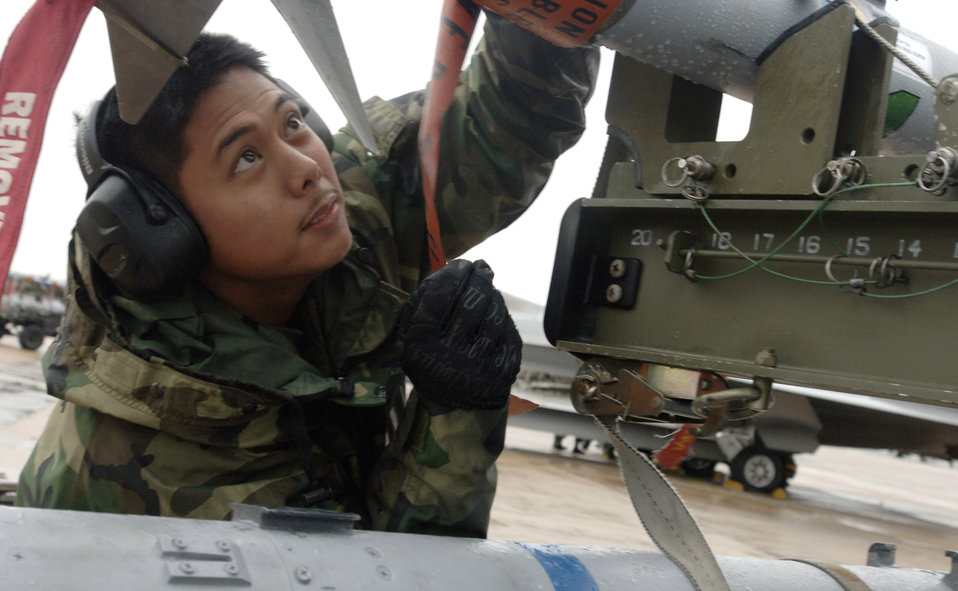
Loading up for competition

Senior Airman Glenn Dayson inspects ammunition during the Load Competition of the Year Jan. 18 at Langley Air Force Base, Va. The competition evaluates technical proficiency, safety procedures and overall time. Airman Dayson is with the 71st Fighter Squadron.